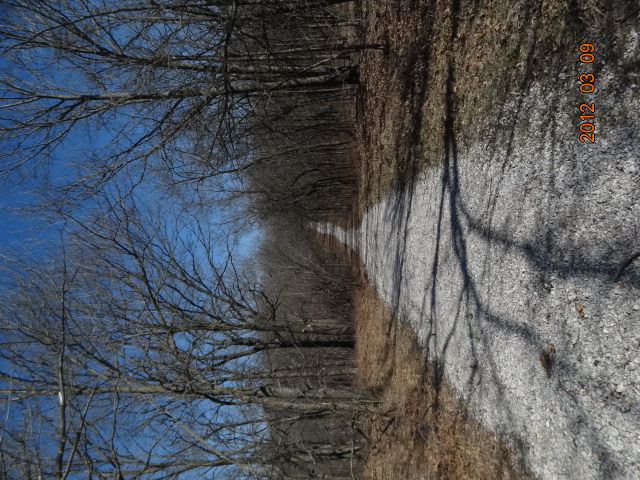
Root Cemetary Trail